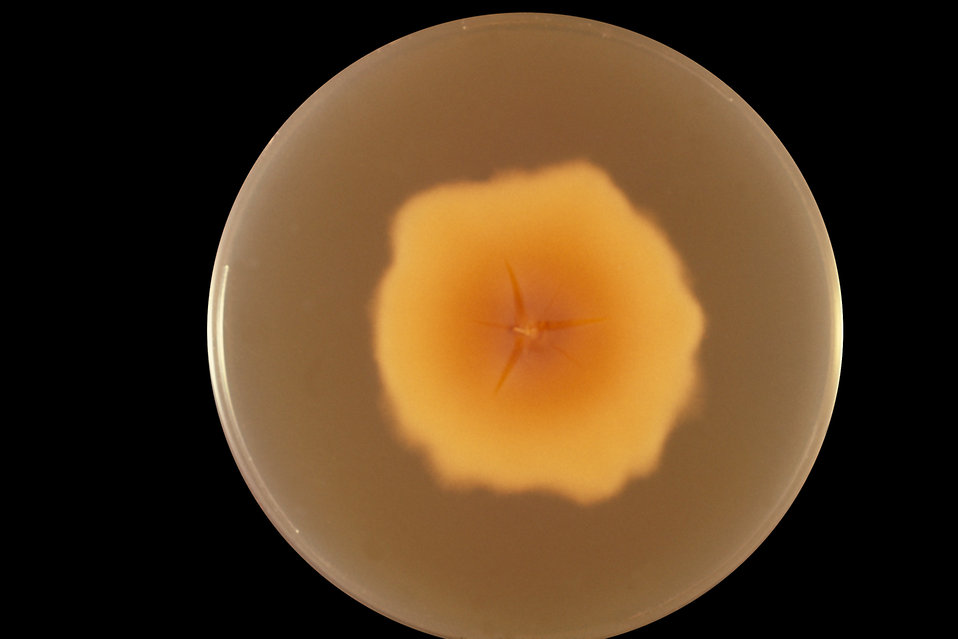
This is a reverse (bottom) view of a Sebouraud's dextrose agar plate culture growing a colony of Microsporum persicolor.